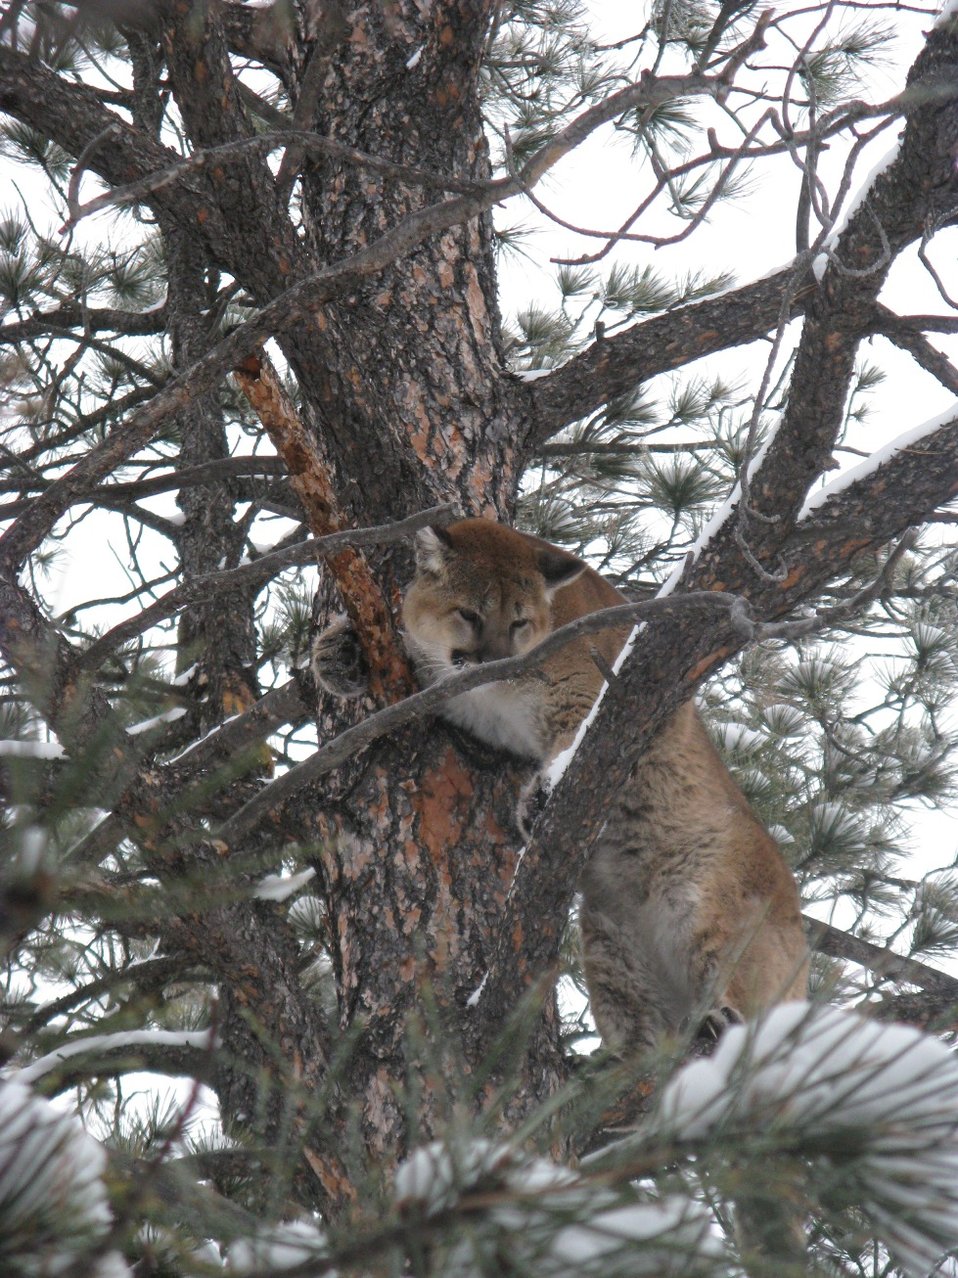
Mountain Lion in Tree

A mountain lion is about to take part in a study to help researchers better understand mountain lion ecology on the Charles M. Russell National Wildlife Refuge (CMR) and surrounding areas.